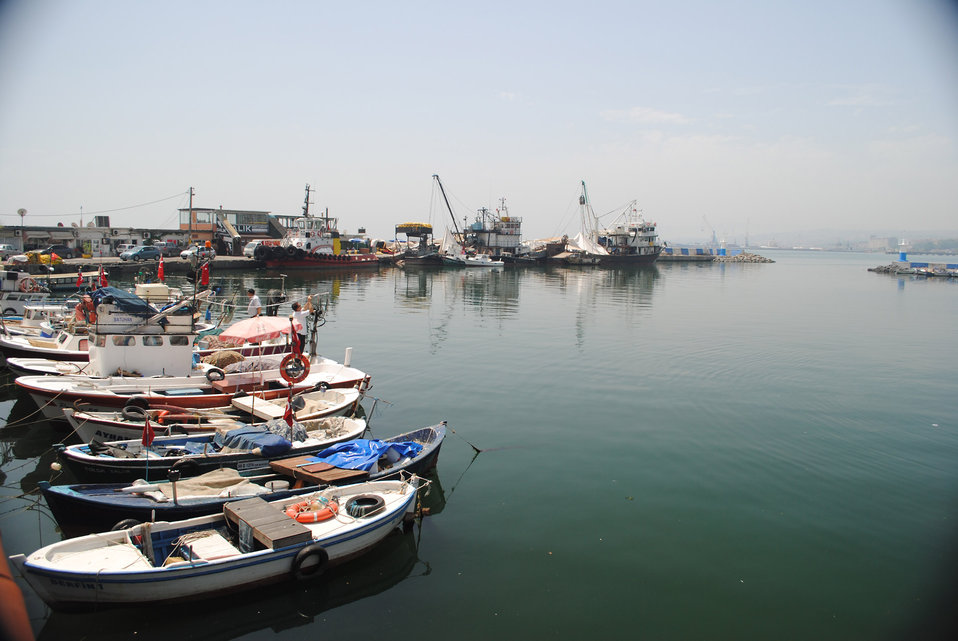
Cockboats in the haven

The cockboats are in the haven on a sunny day of may and waiting for the night - no manipulation at this photo.